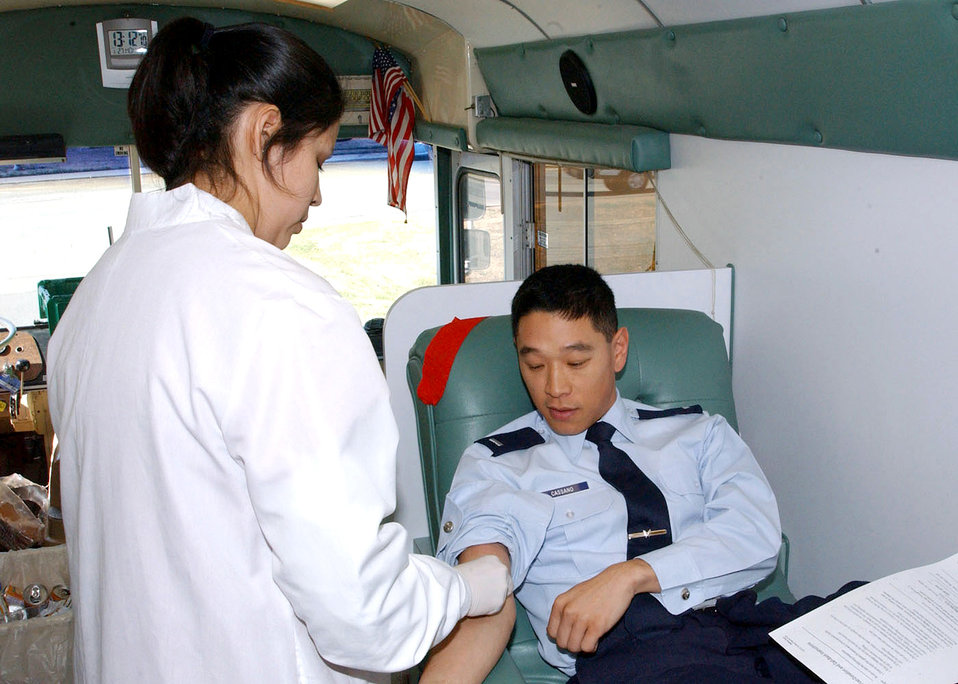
Blood drive breaks record -- again!

SHEPPARD AIR FORCE BASE, Texas -- First Lt. Scott Cassano of the 82nd Communications Squadron here donates blood Jan. 27 during a blood drive. The base collected 653 units, breaking the Texas state record set by Plano East High School, which collected 457 units recently. Sheppard had set the record previously before being unseated by the high school.